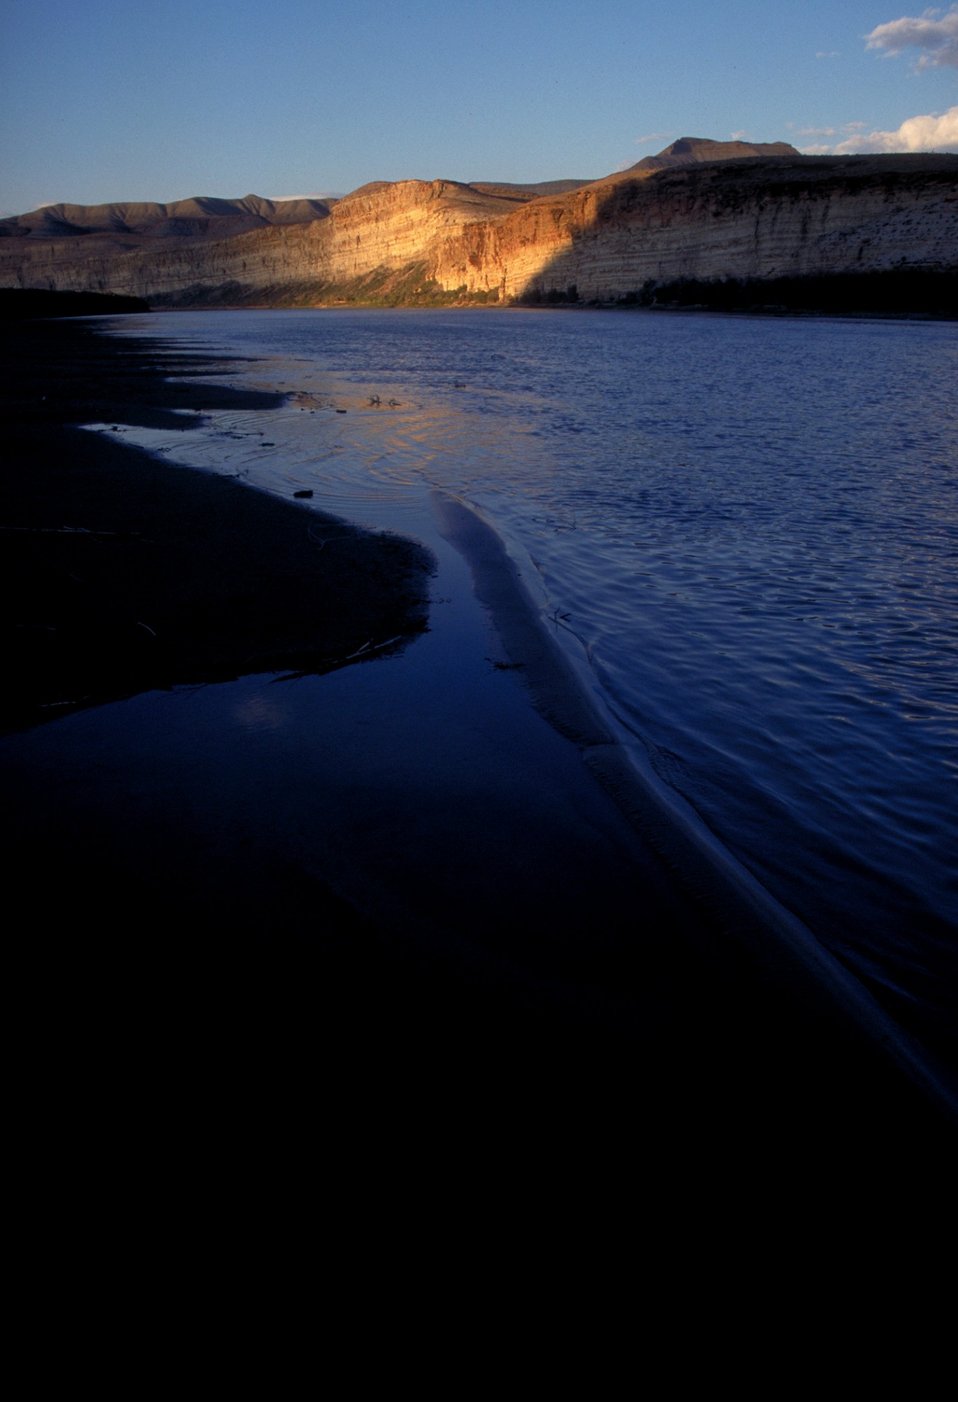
Desolation/Gray Canyons near Price, Utah.